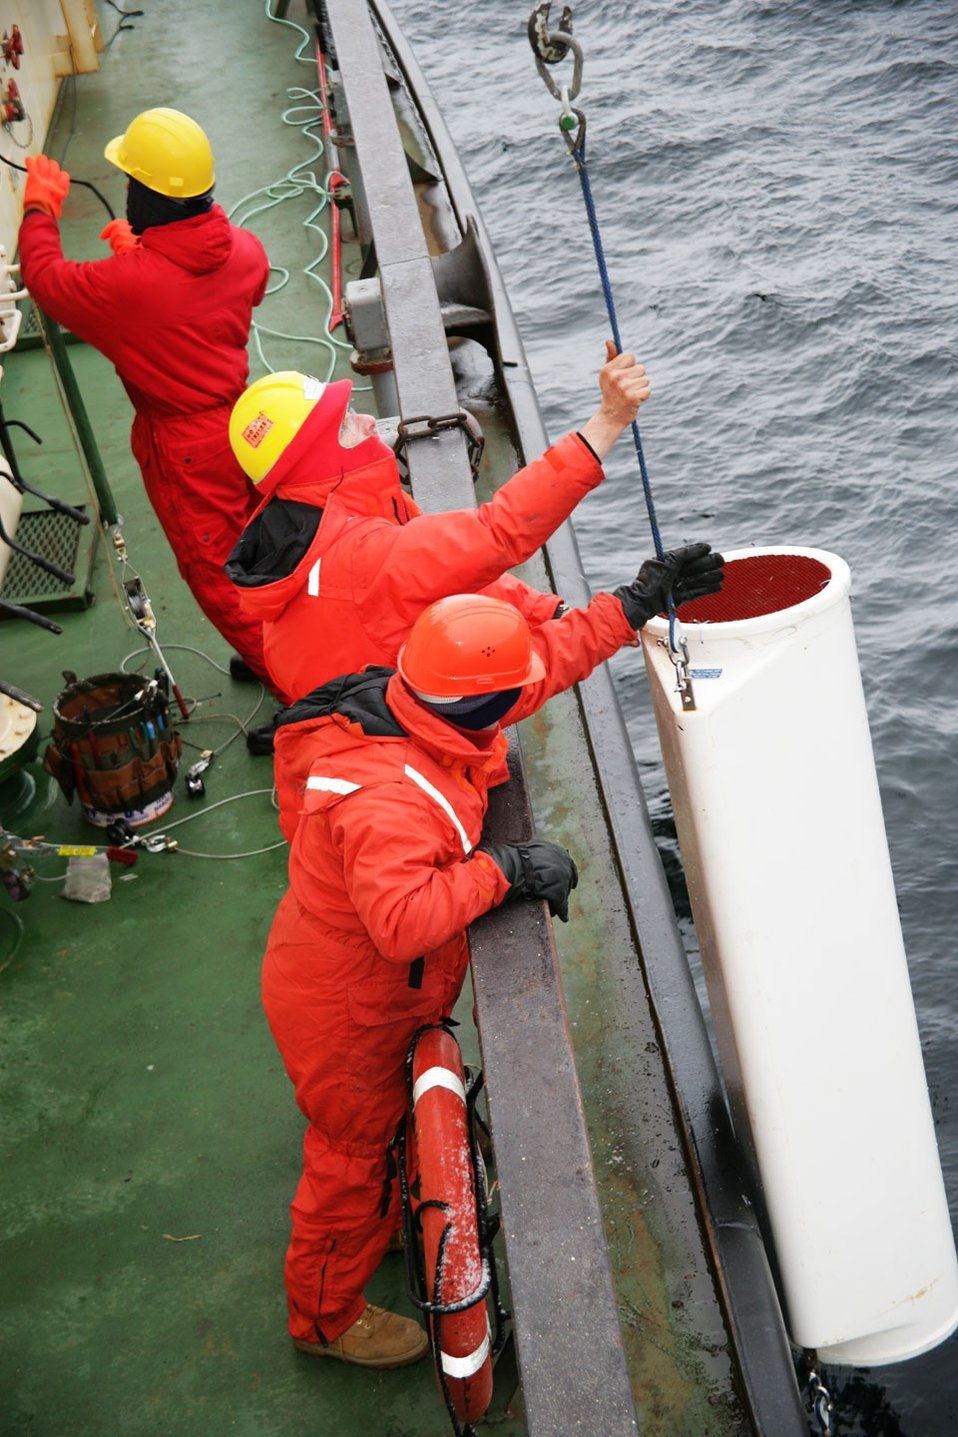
Deploying a sediment trap off the KAPITAN DRANITSYN.